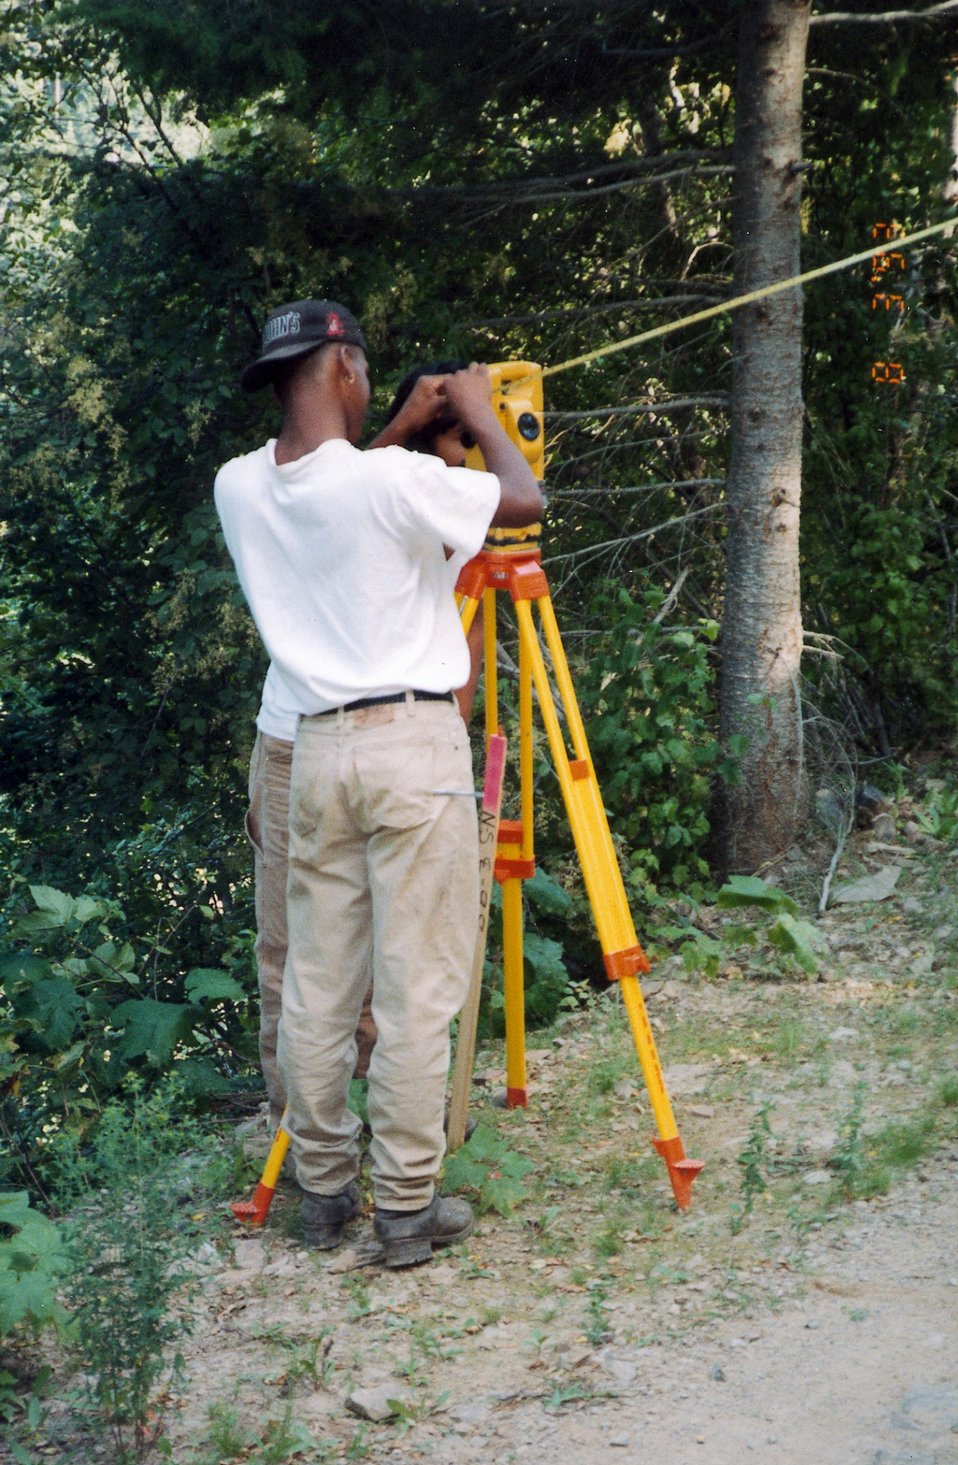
Cadastral Surveys Idaho Bureau of Land Management